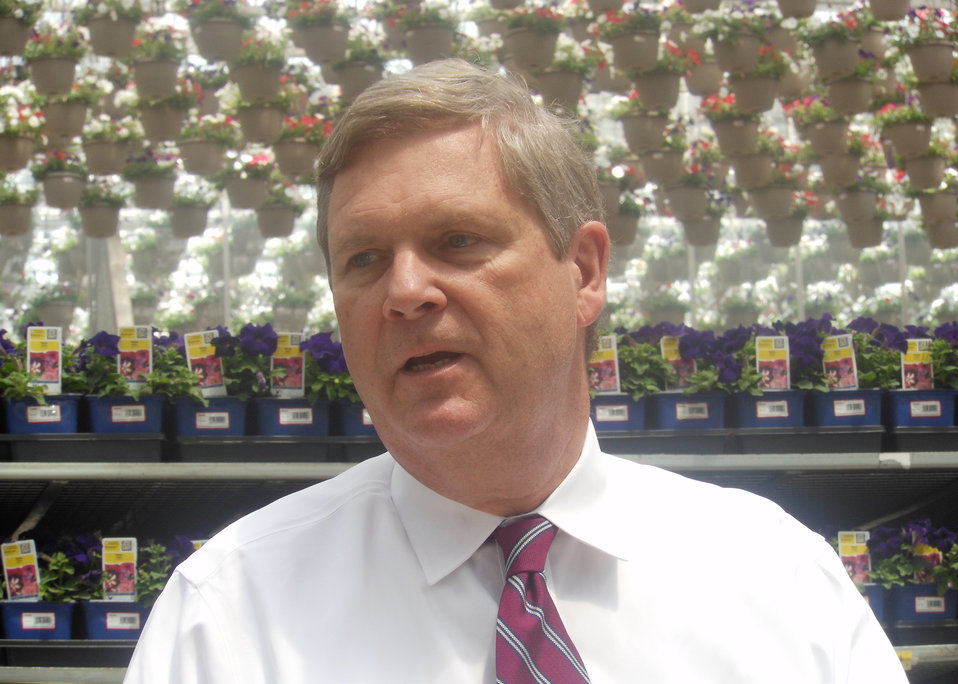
Agriculture Secretary Tom Vilsack announces the selection of 31 individuals and rural business owners in North Carolina through the U.S. Department of Agriculture’s (USDA) Rural Energy for America Program (REAP) which was re-authorized in the 2008 Farm Bill at Metrolina Greenhouses in Huntersville, NC on Monday, June 25, 2012. The selected agricultural producers and rural small businesses reduce energy consumption and cost, use renewable energy technologies in their operation, or conduct feasibility studies for renewable energy projects. The Metrolina greenhouses operation has drastically cut its energy bills by replacing a natural gas heating system with a wood boiler, funded in part with USDA REAP. The wood chips used to fuel the boiler also provide an additional market for local lumber mills and logging operations. Metrolina produced 187 billion BTUs from the biomass boilers between October 1, 2011 and May 30, 2012.